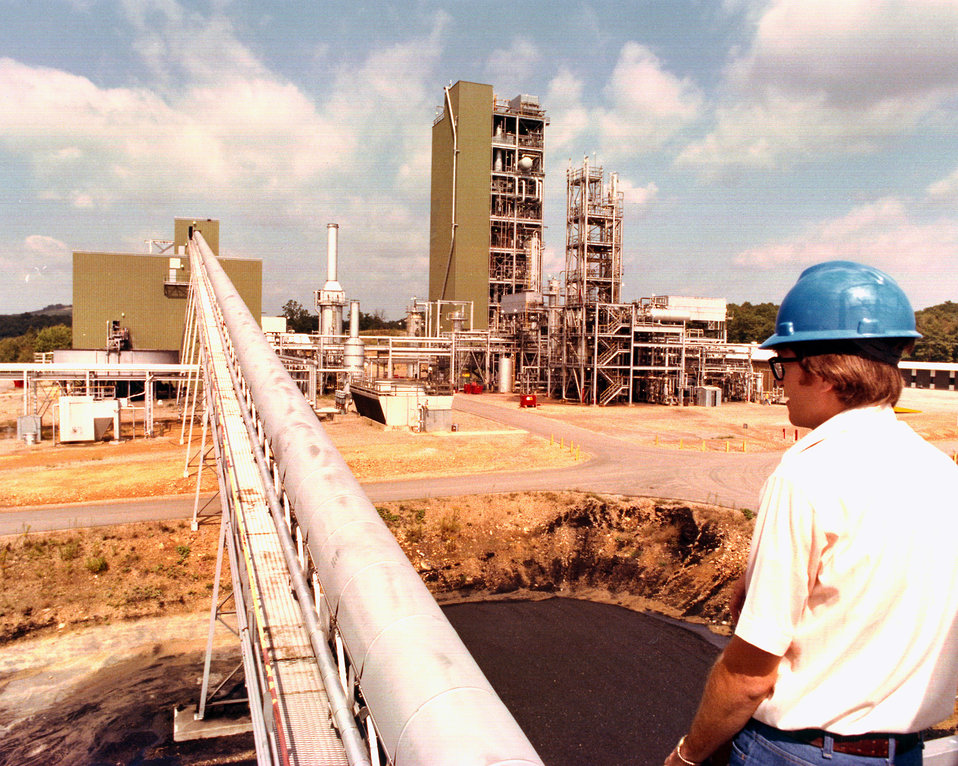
WORKERS BESIDE THE COAL CONVEYOR.

THE BIGAS PILOT PLANT HAS A TWO-STAGE, ENTRAINED-BED GAS- IFIER. IN THIS GASIFIER, PULVERIZED COAL IS CONVERTED TO METHANE-RICH GAS BY REACTING THE COAL WITH STEAM AND OXYGEN UNDER HIGH PRESSURE. THE METHANE-RICH GAS IS PROCESSED TO REMOVE THE HYDROGEN SULFIDE AND CARBON DIOXIDE WHICH LEAVES THE HIGH BTU GAS. THE BIGAS REACTOR CAN HANDLE ALL TYPES OF COAL. DUE TO THE HIGH OPERATING TEMPERATURE OF OVER 2500 DEGREES F., THERE IS NO TAR IN THE PRODUCT GAS, THUS SIMPLIFYING THE GAS CLEANUP STEP. HIGH METHANE YIELDS ARE ACHIEVED WITHOUT METHANATION, AND COALS CAN BE GASIFIED WITHOUT PRIOR TREATMENT BECAUSE THE PROCESS USES AN ENTRAINED-BED RATHER THAN A FIXED-BED OR FLUIDIZED-BED SYSTEM.